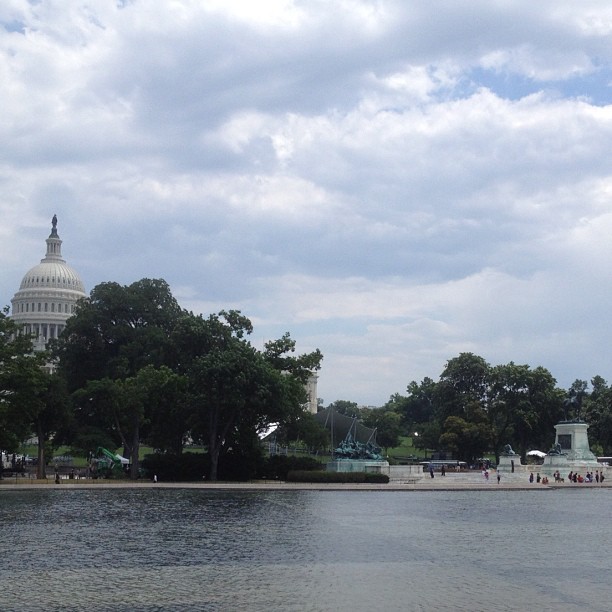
Ready for 4th! Capitol Reflecting Pool refilled after AOC removes 10 tons of debris and installing duck ramps.